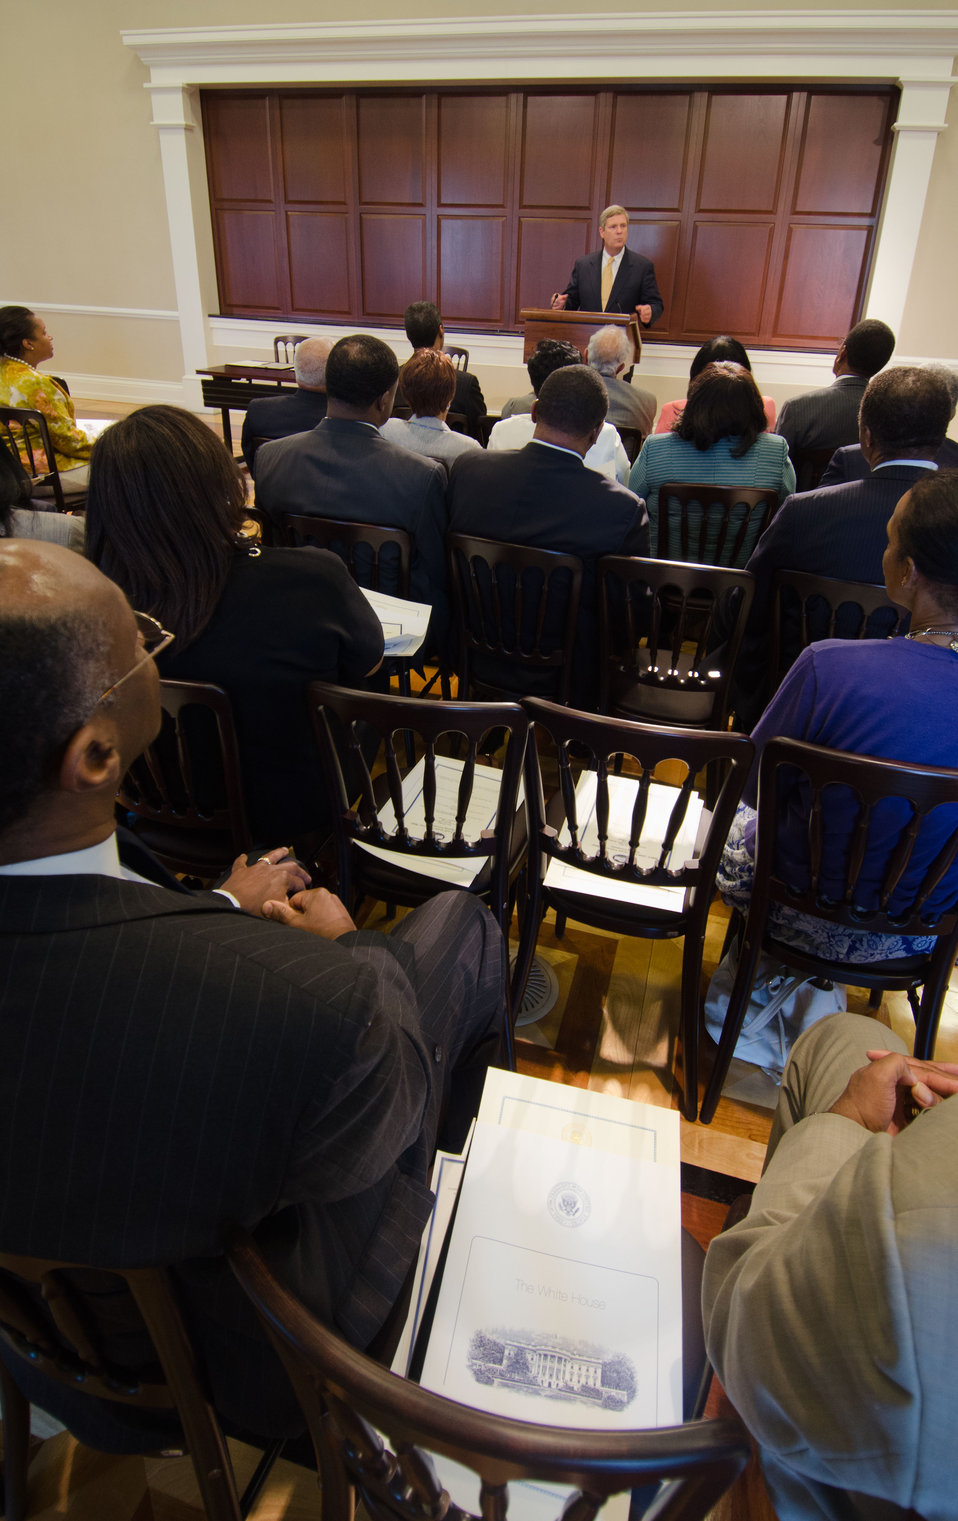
Agriculture Secretary Tom Vilsack speaks during the 2012 Historically Black Colleges and Universities 1890 Land-Grant University Memorandum of Understanding Signing Ceremony on Friday, June 29, 2012, in the White House’s Eisenhower Executive Office Building, Washington, DC. It has been150 years since the first Morrill Act of 1862, which was signed by President Abraham Lincoln. The action established land-grant universities in every state and territory. The second Morrill Act of 1890 provided funding to designate separate institutions of higher learning for blacks in those states that did not open the doors of their universities to black students.